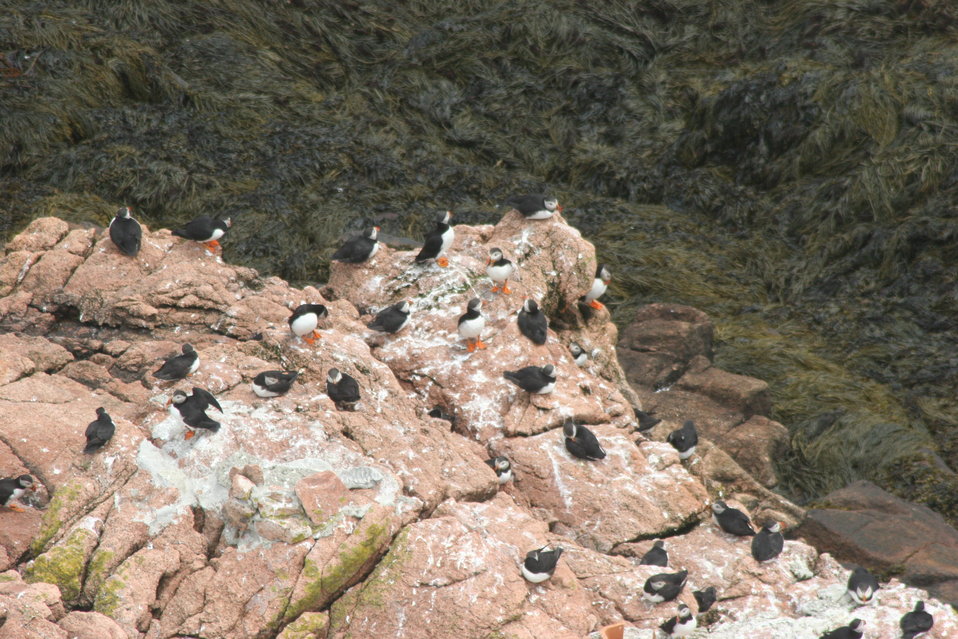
Puffins From The Lighthouse View